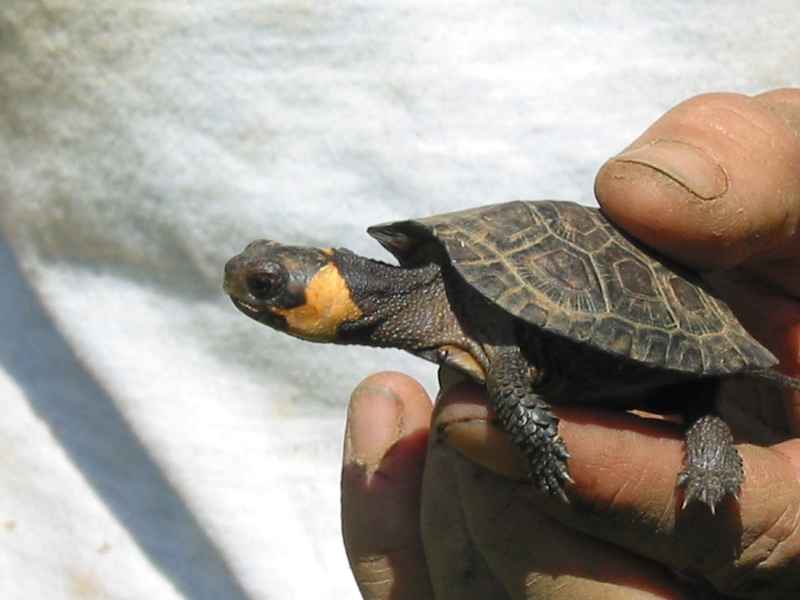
Year-old bog turtle